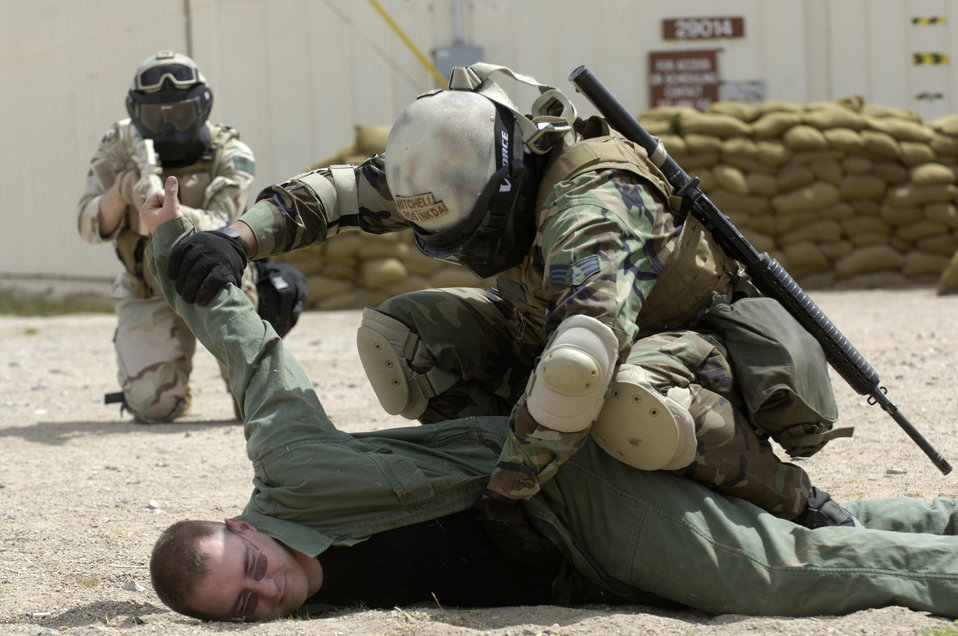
Search

Senior Airman Jesse Mitchell performs a search on a